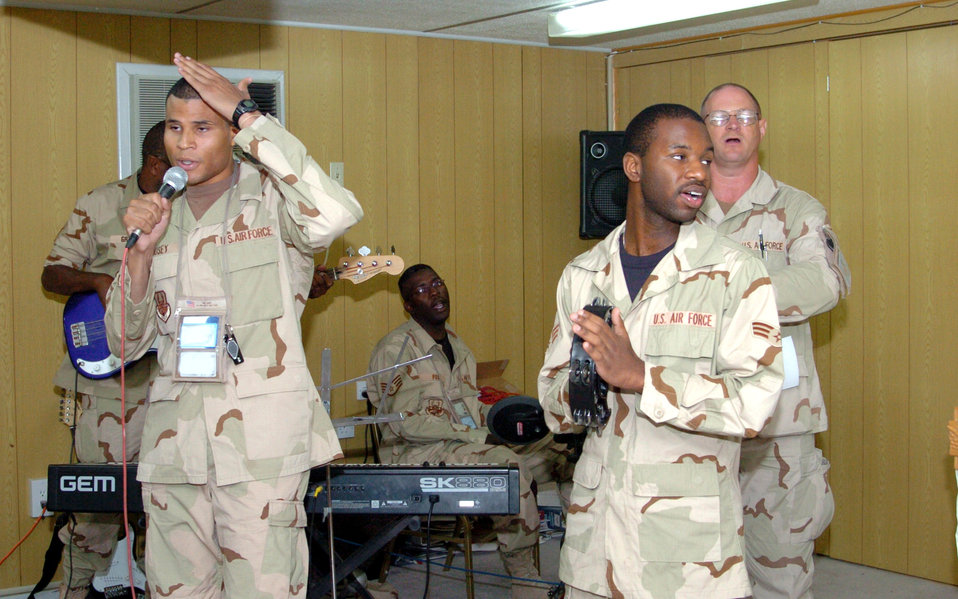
Chaplain team here to serve

The chapel praise team leads the congregation in song during a Protestant service at the 380th Air Expeditionary Wing's chapel in Southwest Asia on Sunday, May 21, 2006. The team includes Senior Airman Toby Housey, 380th Expeditionary Mission Support Group (microphone); Master Sgt. Stanley Grant, 380th Expeditionary Civil Engineer Squadron (bass); Staff Sgt. Anthony Fox, 380th ECES (drums); Senior Airman Arland Fludd, 380th Expeditionary Logistics Readiness Squadron (tambourine); and Master Sgt. James Polasky, 380th ECES.